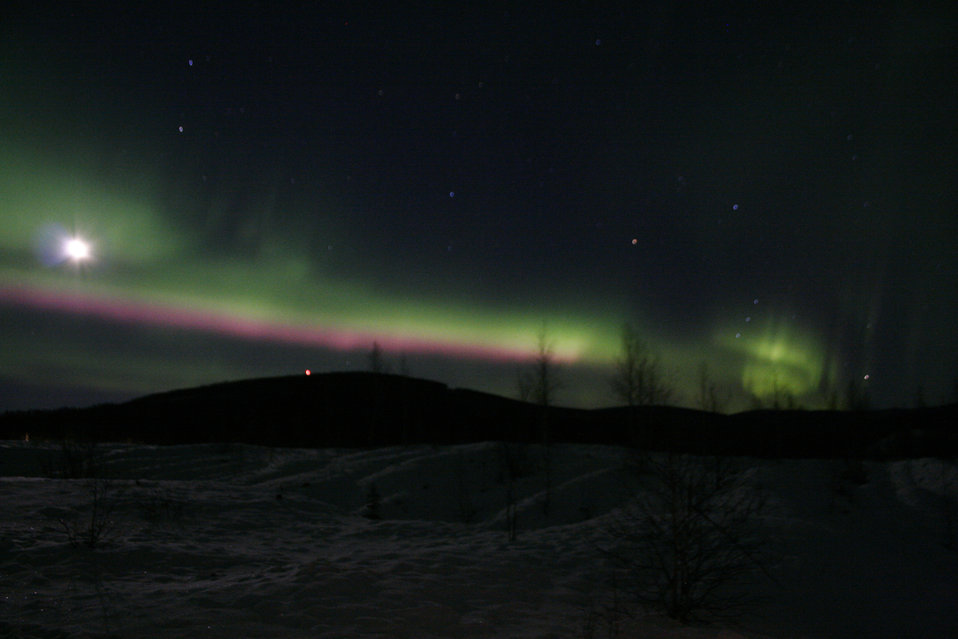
Northern Lights

A view of the Northern Lights